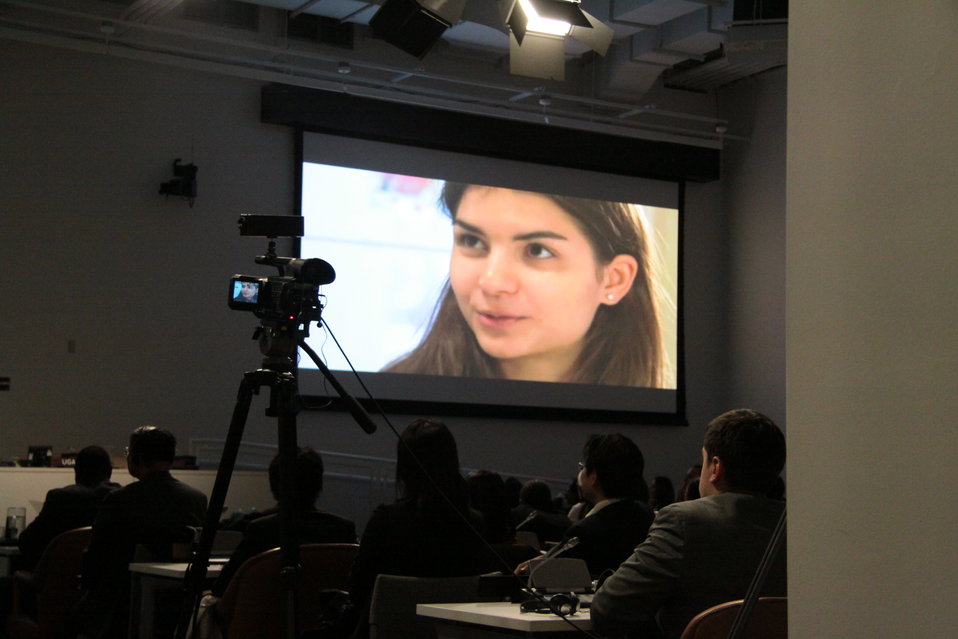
Voices of a New Generation: Young People Set the Agenda at the UN Security Council

Individuals watch a video of a young woman expressing her opinion of what should be on the agenda of the UN Security Council during the special event, Voices of a New Generation, at the United Nations in New York, New York, on December 21, 2010.